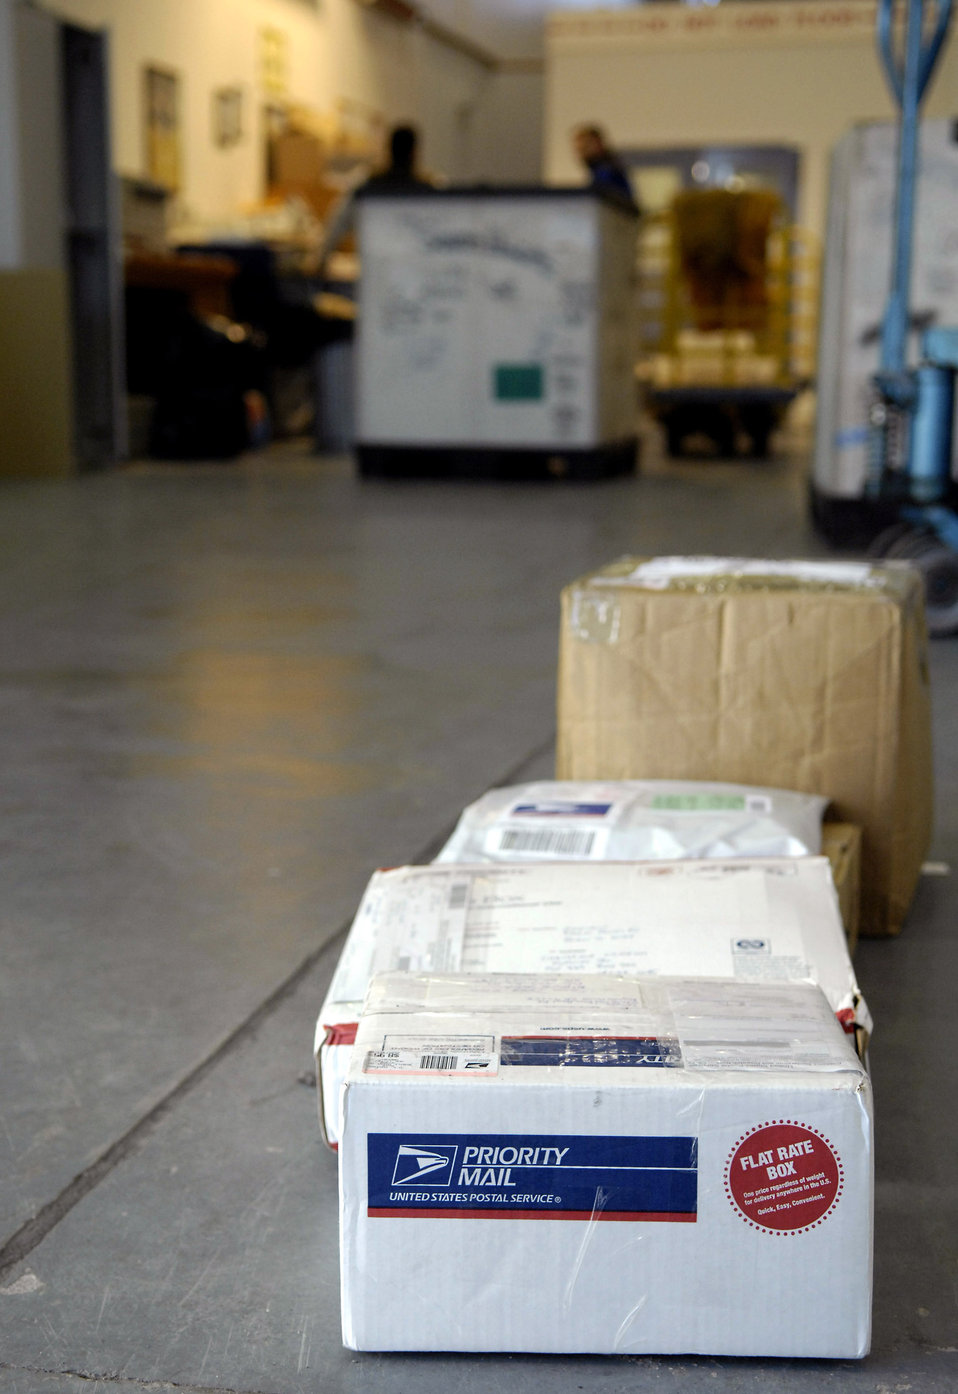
Neither snow nor deep freeze keep mail from Antarctica

Mail waits to be loaded into containers for Operation Deep Freeze members Aug. 23 at Christchurch, New Zealand. Members of Det. 4, Pacific Air Forces Air Postal Squadron process all mail coming in and out of Antarctica and can handle up to 240,000 pounds of mail during Operation Deep Freeze.